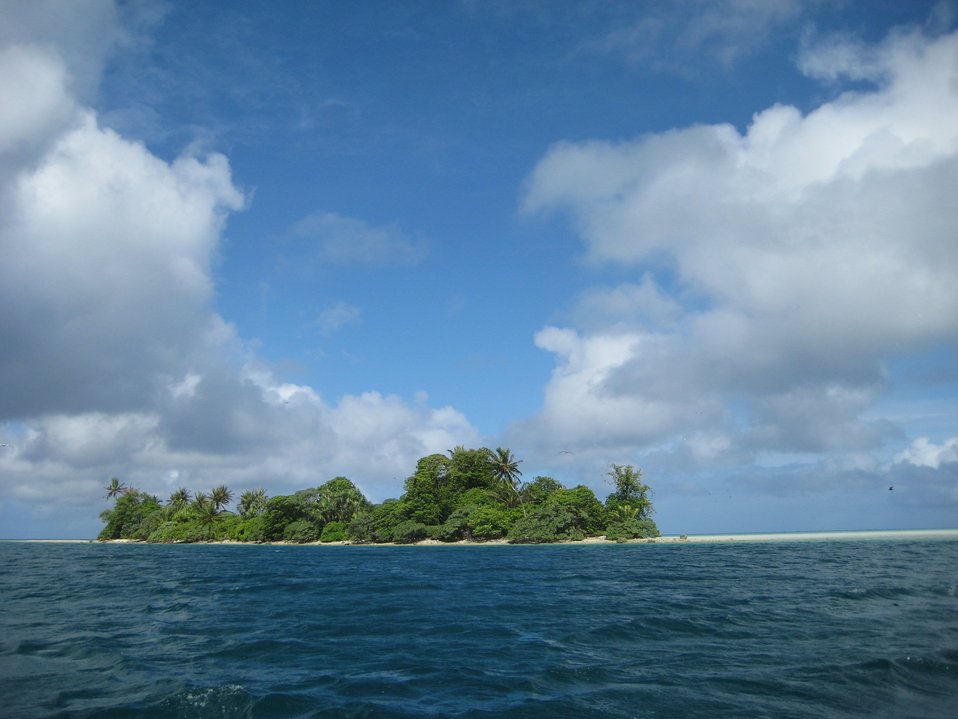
A tropical islet.